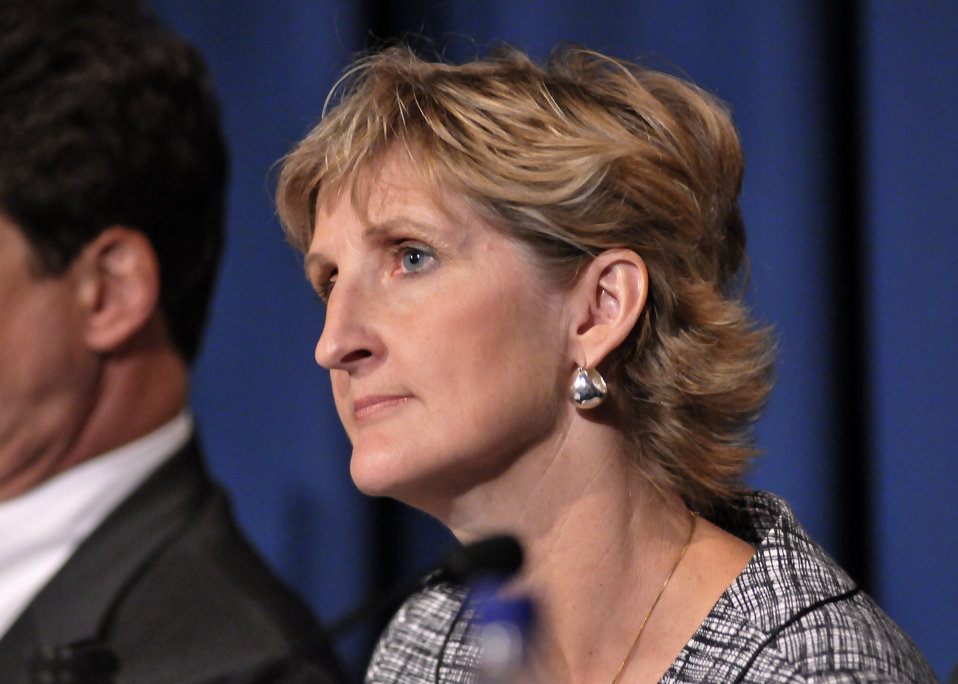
Britta Gross, General Motors